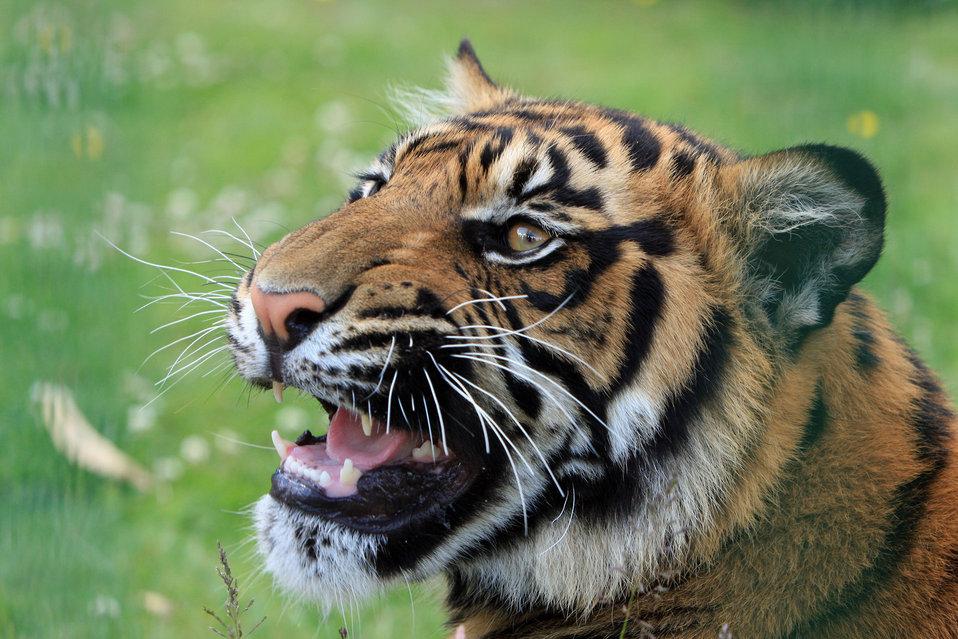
Tiger snarling close-up

Close-up head portrait of a young tiger snarling.